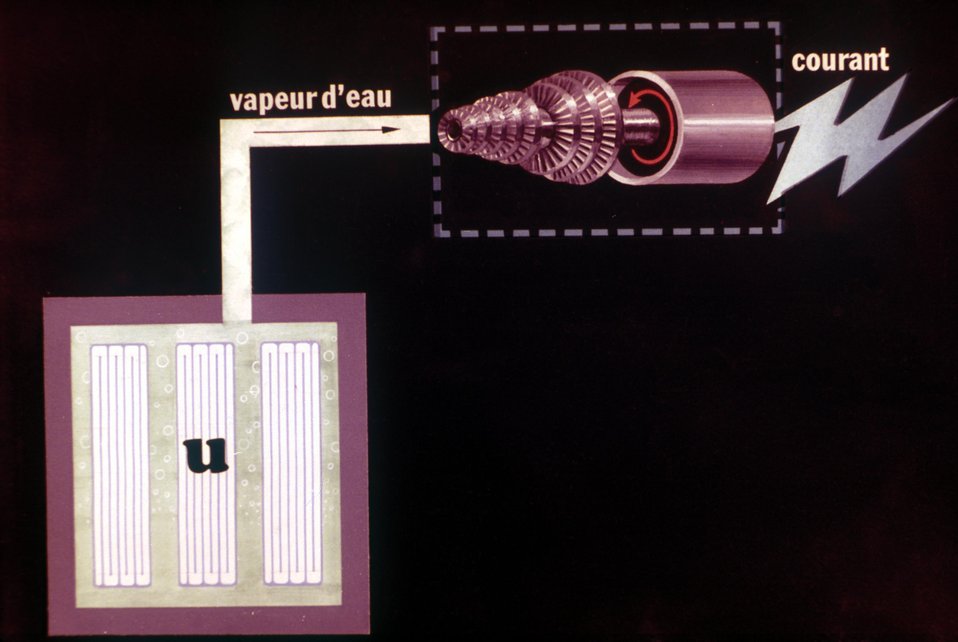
Comment fonctionne une centrale nuclÐaire?